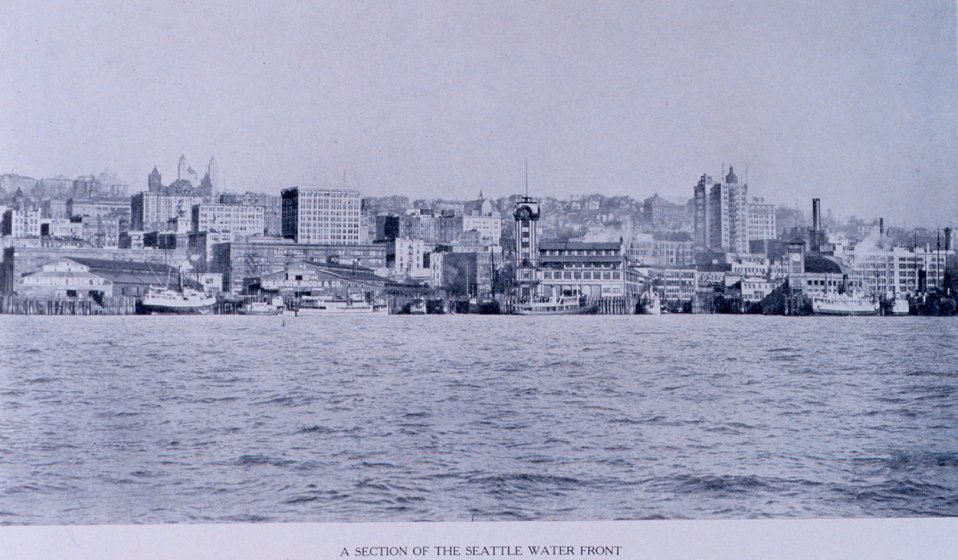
'A Section of the Seattle Waterfront'. In: 'Puget Sound and Western Washington Cities-Towns Scenery', by Robert A. Reid, Robert A. Reid Publisher, Seattle, 1912. P. 58.